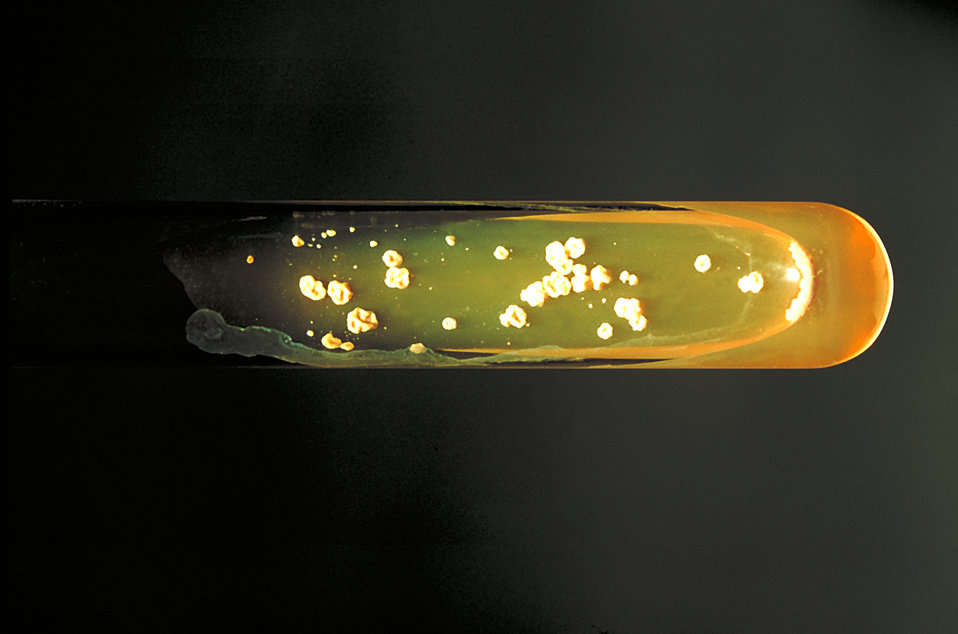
Pictured is a Sabouraud dextrose agar slant culture of the fungus Paracoccidioides brasiliensis grown at 37�C.